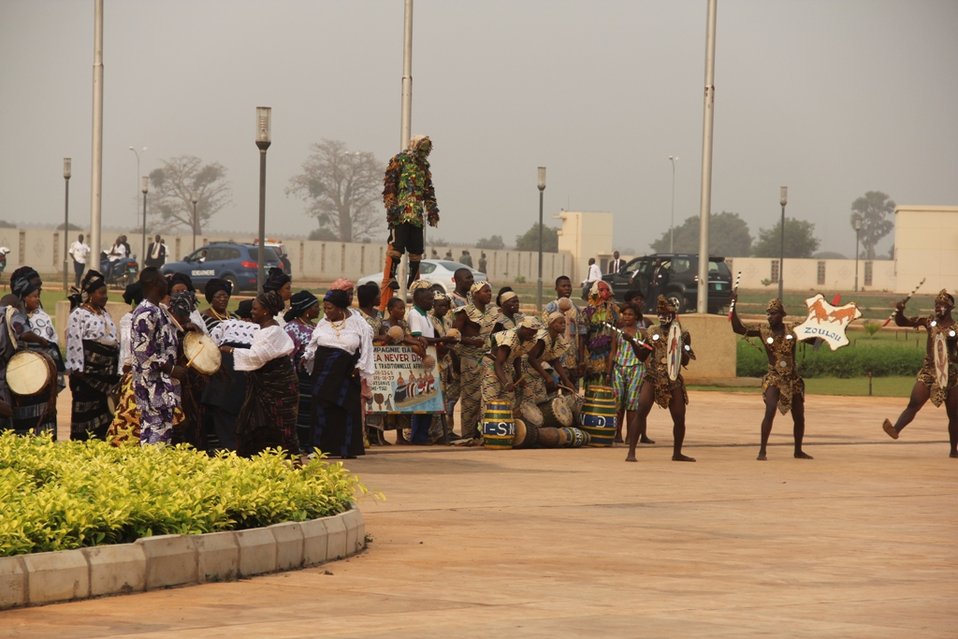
Secretary Clinton Watches the Dancers Perform

U.S. Secretary of State Hillary Rodham Clinton watches the dancers perform outside of the Presidential Palace in Lome, Togo, on January 17, 2012.